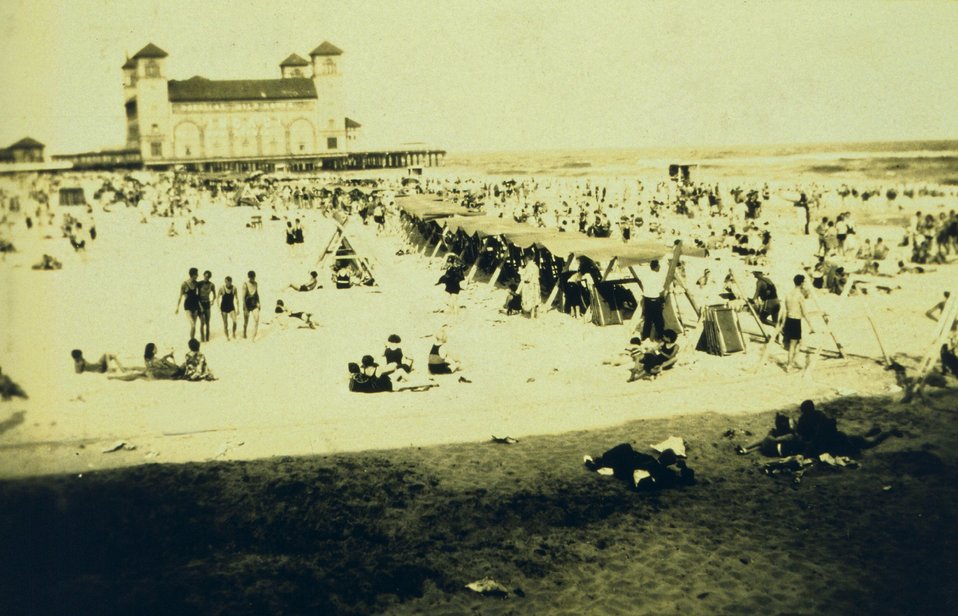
The Garden Pier at Atlantic City.